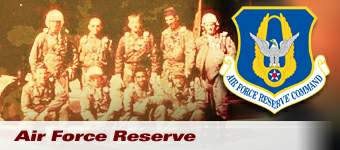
Air Force Reserve 60th birthday

Air Force Reserve celebrates 60 years.